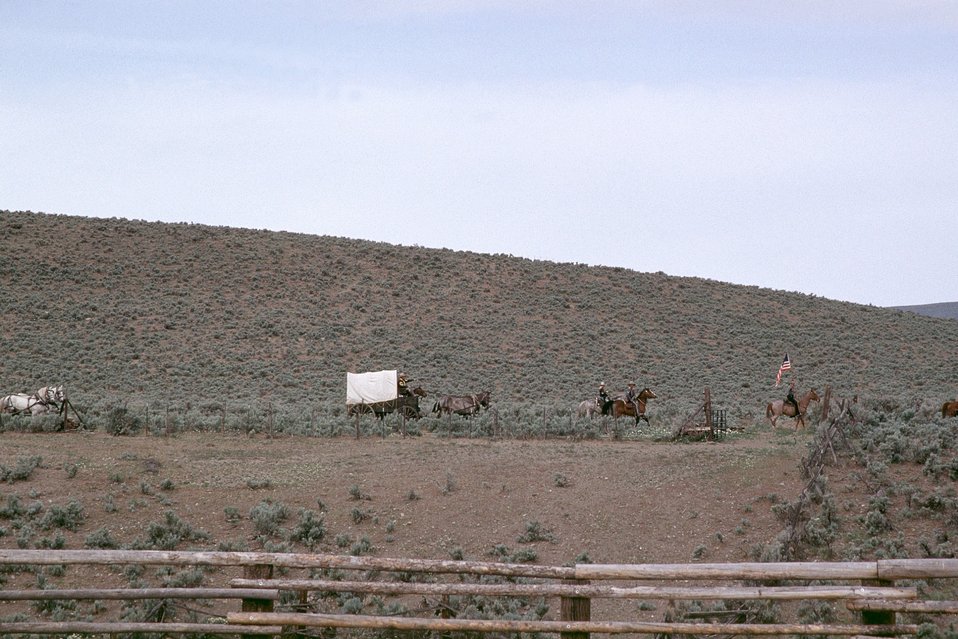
NHOTIC 10th Anniversary, wagon train reenactment. Far shot of covered wagons and pioneers on the Oregon Trail.